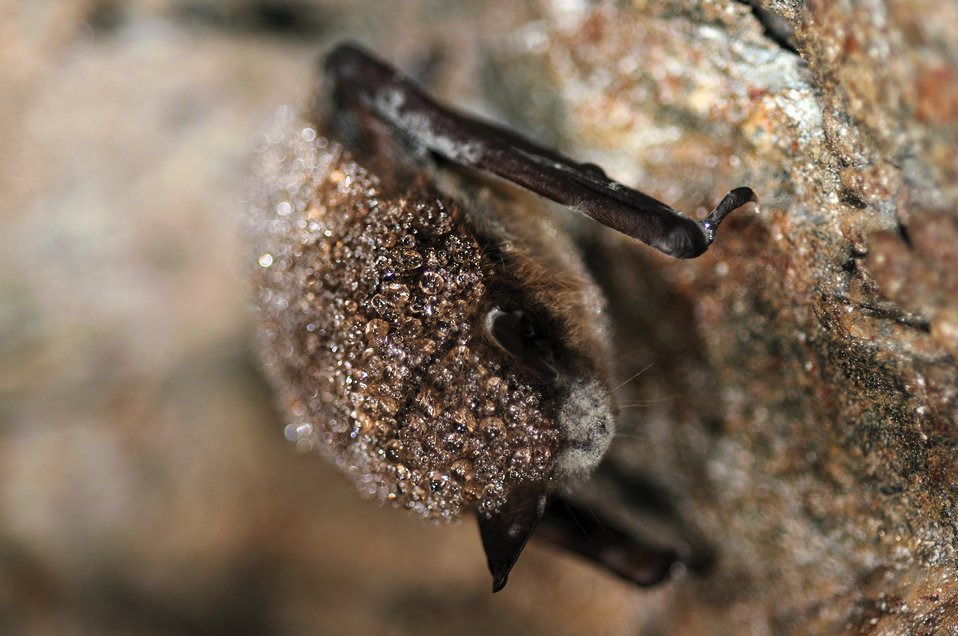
little brown bat white-nose syndrome on muzzle, nose